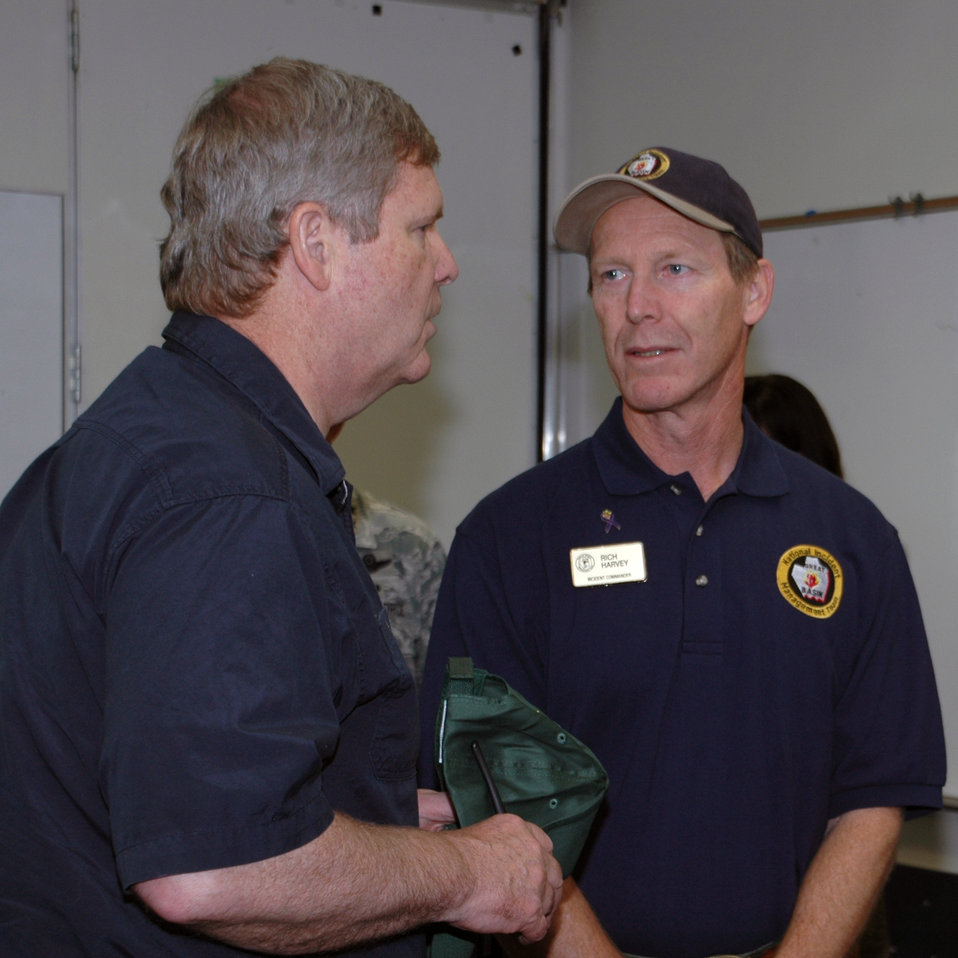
Agriculture Secretary Tom Vilsack (left) speaks with U.S. Forest Service Fire Incident Commander Rich Harvey during Secretary Vilsack's visit to the Waldo Canyon Fire near Colorado Springs, CO on Tuesday, July 3, 2012.